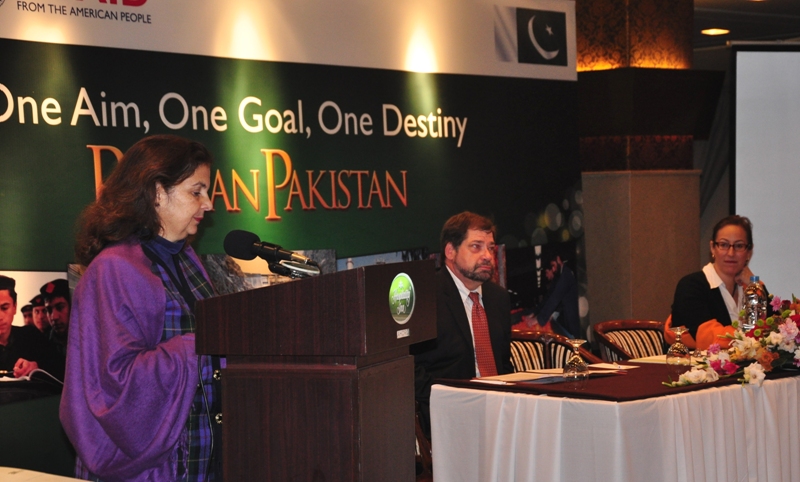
Education Workshop 138